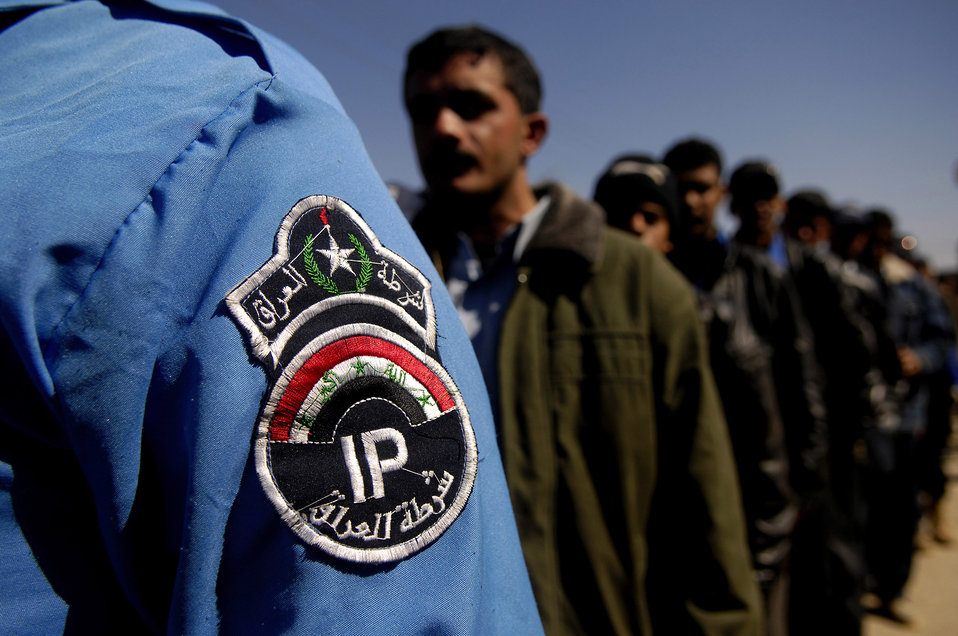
Airmen improve Iraq's security

Iraqi police officers line up to be entered into a database by a handheld interagency identity detection equipment Feb. 23 at Rasheed, Iraq. American Airmen from Det. 3 732nd Expeditionary Security Forces Squadron from Sather Air Base, Iraq, conducted the security screening.